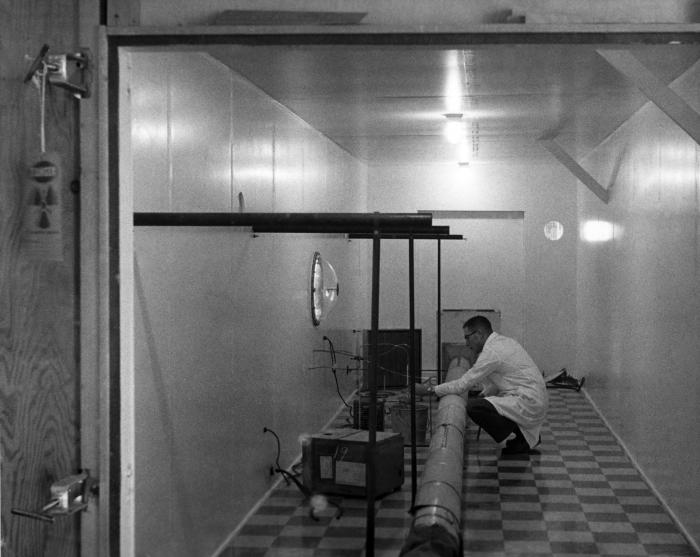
This historic image, provided by the Center for Disease Control's (CDC), National Institute for Occupational Safety and Health (NIOSH), depicted a technician wearing a white lab coat kneeling at a simulated uranium mine workstation. This test center was located at a Salt Lake City, UT, Public Health Service (PHS), Rockefeller Foundation, International Health Division (IHD) field station. As he was observing what was transpiring behind a hemispherical window, the technician was making some adjustments to some of the experimental components. Not knowing the level of contaminants produced, and expelled from the simulated workstation, wearing only a white coat, may, or may not have been what today would be deemed adequate protection against contamination.